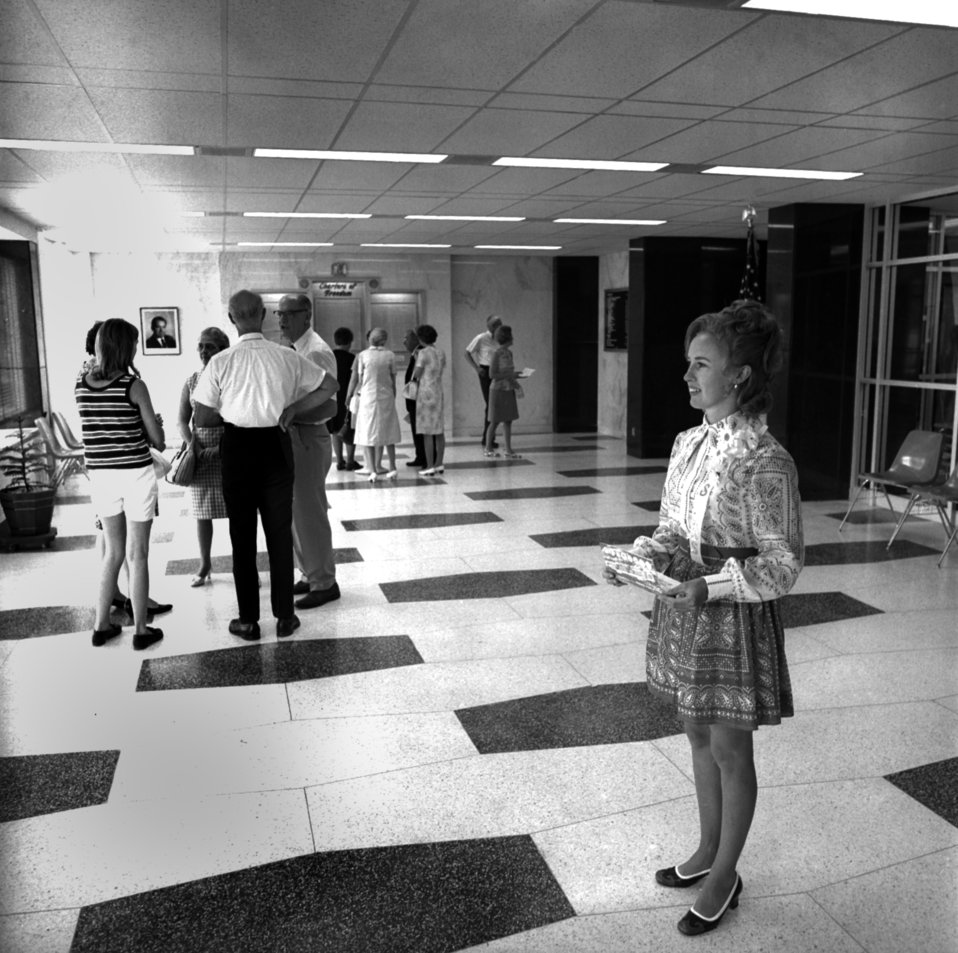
70-172a DOE Photo by Frank Hoffman
Formal Dedication New AEC (Atomic Energy Commision) - FOB (Federal Office Building) Oak Ridge Tennessee 6-27-1970